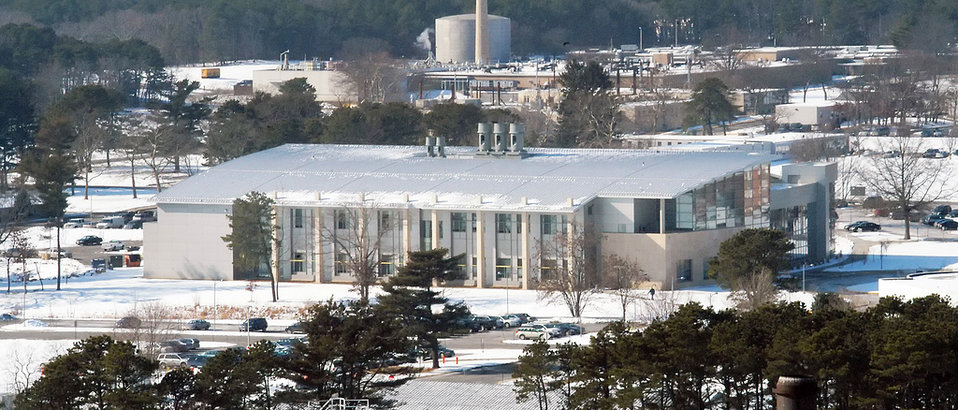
Center for Functional Nanomaterials (CFN) at BNL provides state-of-the-art capabilities for the fabrication and study of nanomaterials, with an emphasis on atomic-level tailoring to achieve desired properties and functions.
The CFN is a science-based user facility, simultaneously developing strong scientific programs while offering broad stress to is capabilities and collaboration through an active user program.